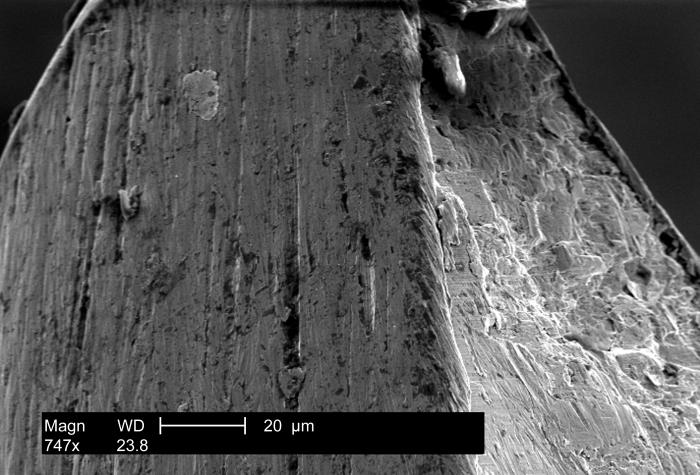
At a magnification of 747x, this SEM reveals the roughened surface at the tip of one of the prongs of a 'bifurcated' smallpox vaccination needle.